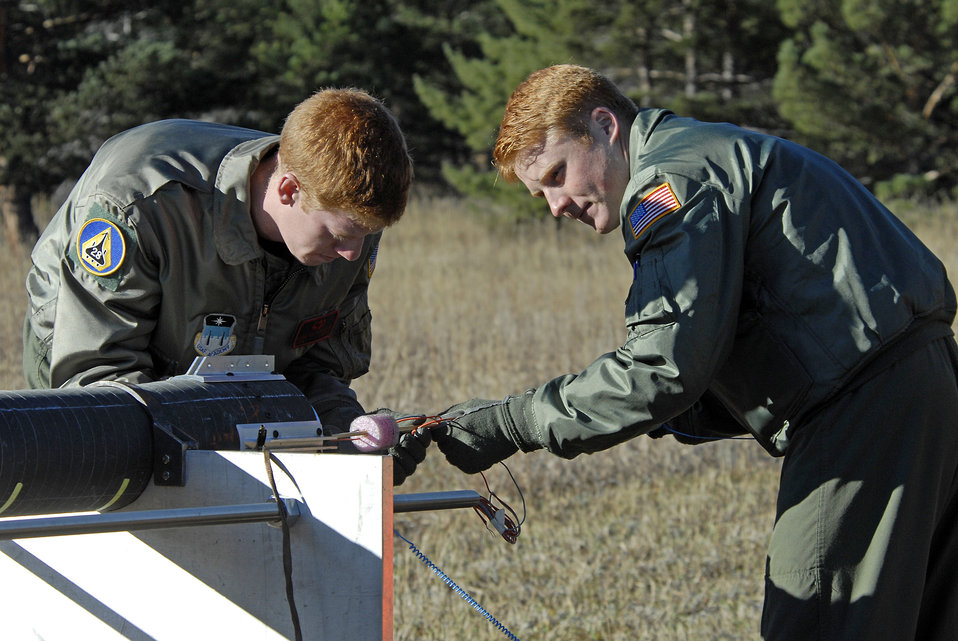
FalconLaunch 6 test-fire ends with a 'bang'

Cadets 1st Class Daniel Richardson and Sean Foote prepare FalconLaunch 6 for a static test fire in Jacks Valley at the U.S. Air Force Academy, Colo., Nov. 4, 2009. The rocket exploded a fraction of a second into the test firing, leaving cadets to determine the cause of the malfunction.